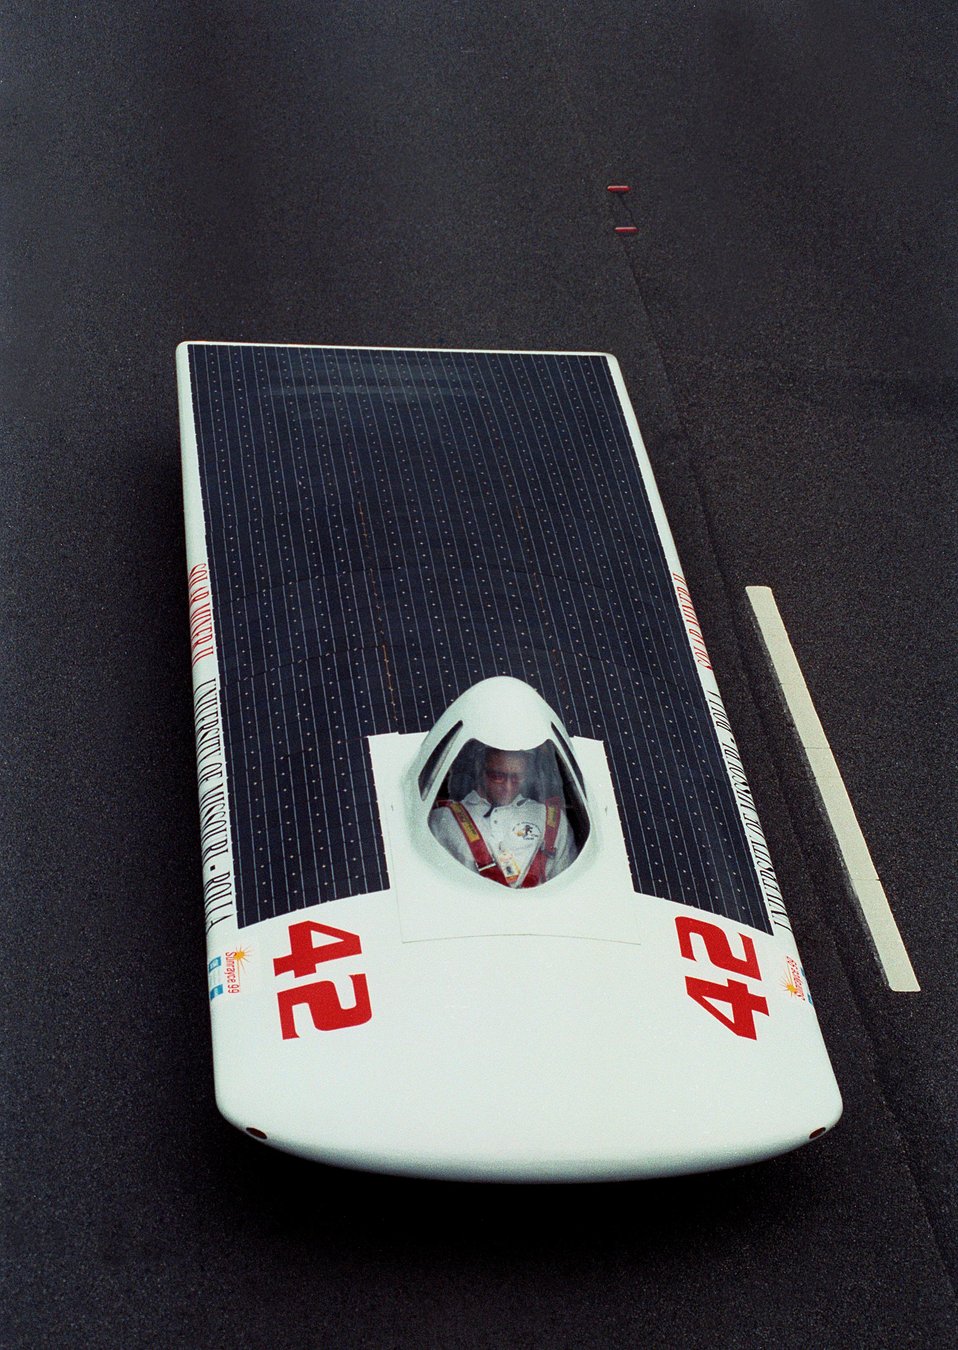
#42 THE SOLAR MINER ON THE ROAD DURING SUNRAYCE 1999.

SUNRAYCE 1999 STARTED IN WASHINGTON, DC, JUNE 20, 1999 AND WAS COMPLETED ON JUNE 29, 1999 AT DISNEY WORLD IN FLORIDA. DOE HELPS TO SPONSOR THE SUNRAYCE AS PART OF ITS COMMITMENT TO RESEARCH AND DEVELOPMENT OF CLEAN , COST EFFECTIVE, ENERGY EFFICIENT RENEWABLE ENERGY. THE SUNRAYCE BRINGS TOGETHER TEAMS OF STUDENTS FROM A WIDE RANGE OF DISCIPLINES, INCLUDING ENGINEERING, COMPUTER SCIENCE, PHYSICS, MARKETING AND GRAPHICS. STUDENTS MUST DESIGN, CONSTRUCT AND RACE THEIR SOLAR-POWERED VEHICLES, WITH FACULTY ACTING ONLY IN ADVISORY CAPACITY.